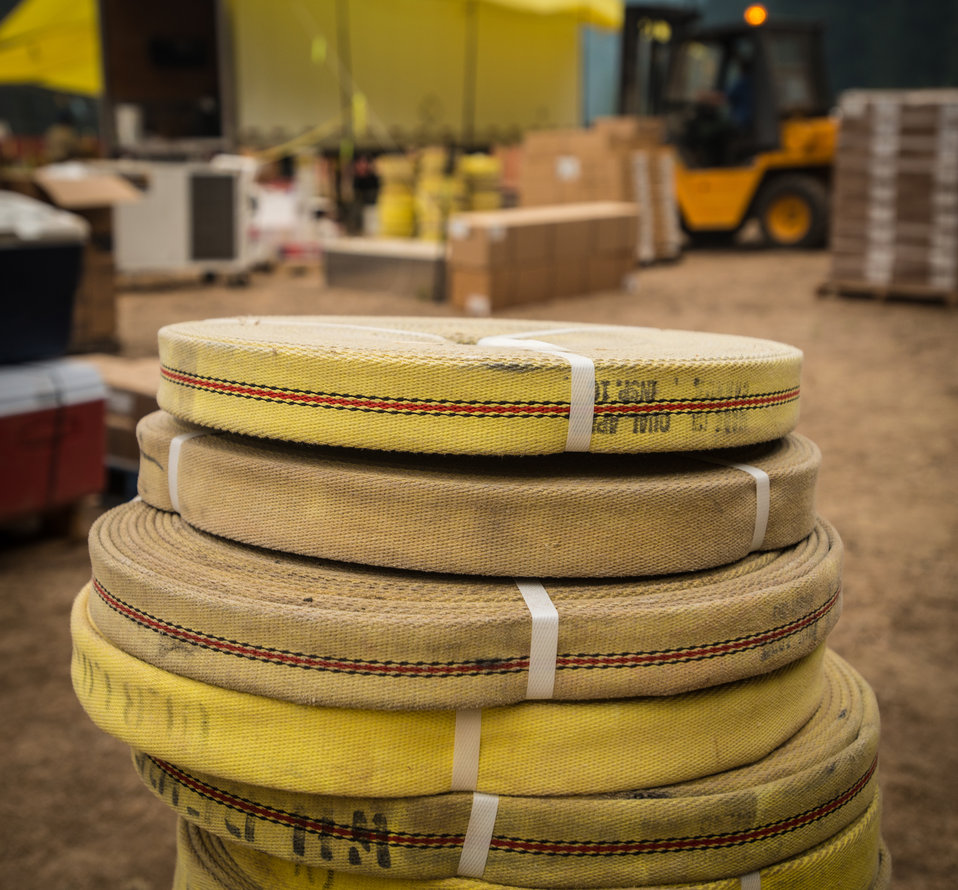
Serviceable hand lines (fire hose) available for firefighters at the Salmon River Complex Fire burning northwest of Sawyers Bar and west of Etna and Yreka, CA in the Klamath National Forest, on Tuesday, Aug. 6, 2013. It is vital that when a firefighter needs fire resistant clothing, a Mccloud Tool, Pulaski Axe, Combi Tool, pumps, connectors and hoses to draw water from a portable reservoirs to pressurize hand line (fire hoses), they go to this centralized point to get readily available item for issue or replacement as needed. These supplies have been shipped from the National Interagency Supply Cache System depots and/or other caches to this and other fires across the nation.